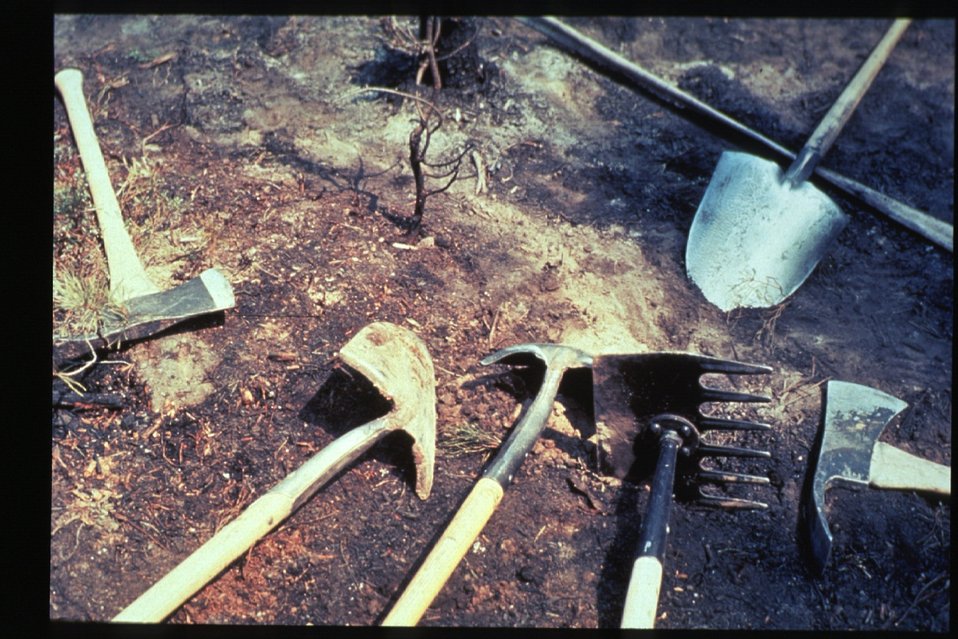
Boise Foothills Fire Danskin Mountains and South Fork of Boise River Shovel Crew Four River Field Office LSRD Lower Snake River District